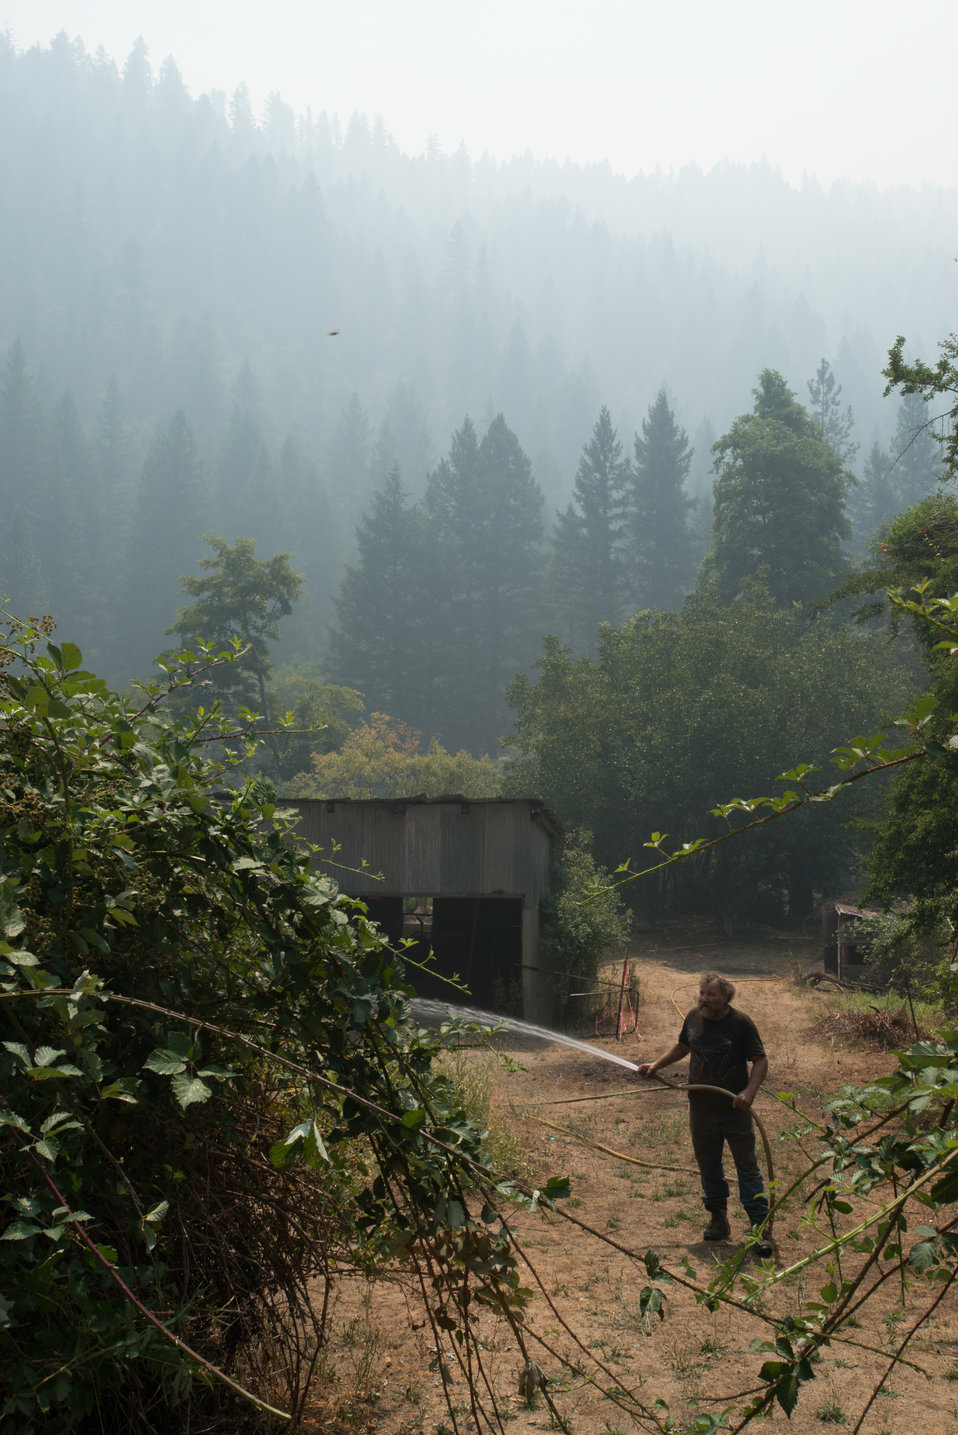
Amid smoke from the Salmon River Complex Fire, in the Klamath National Forest, Dale Crameruses his fire hose, to soak his home, garden and property, in Sawyers Bar, CA in preparation for the possible approach of flames, on Tuesday, Aug. 6, 2013. Wildland/structural firefighters went through the town, assessing fire prevention needs and talking with each available resident about fire prevention measures they are doing on their own as well as other measures they could take to prepare for fire. Actions such as moving away firewood, cutting and clearing plants next to their structures, and using garden hoses to soak structures and grounds all help in the event the main fire comes into their town.
There are two types structure environments in the realm of wildland firefighting.
This urban intermix structural protection environment is generally the more challenging, where structures have been built within a wildland area, isolated to some degree from other structures, but with no separation from wildland fuels (trees, brush and grass). This requires each structure to be assessed on a case-by-case basis. Fire protection measures will be tailored to each situation; defending these structures require a more complex solution, more firefighters, equipment and resources per structure.